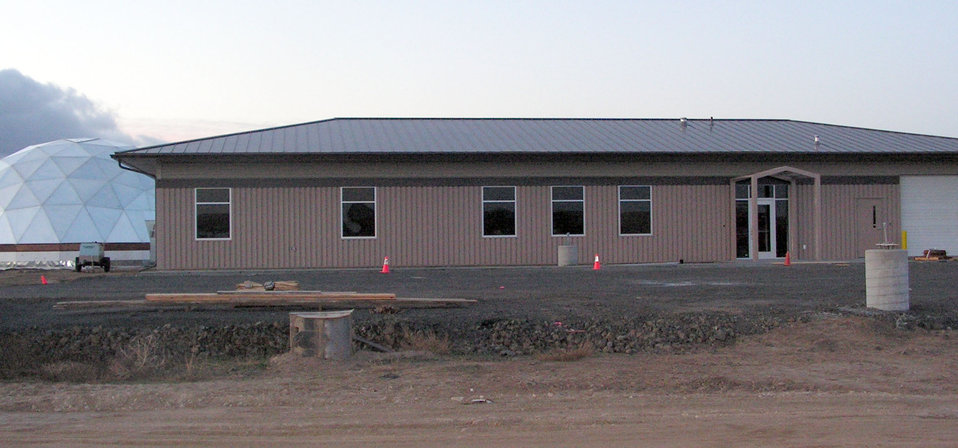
Umatilla Tribes to Grow Native Plants for Hanford

The Confederated Tribes of the Umatilla Indian Reservation’s field station, located in Mission, Ore., will be home to one-of-a-kind research and development for revegetation efforts.